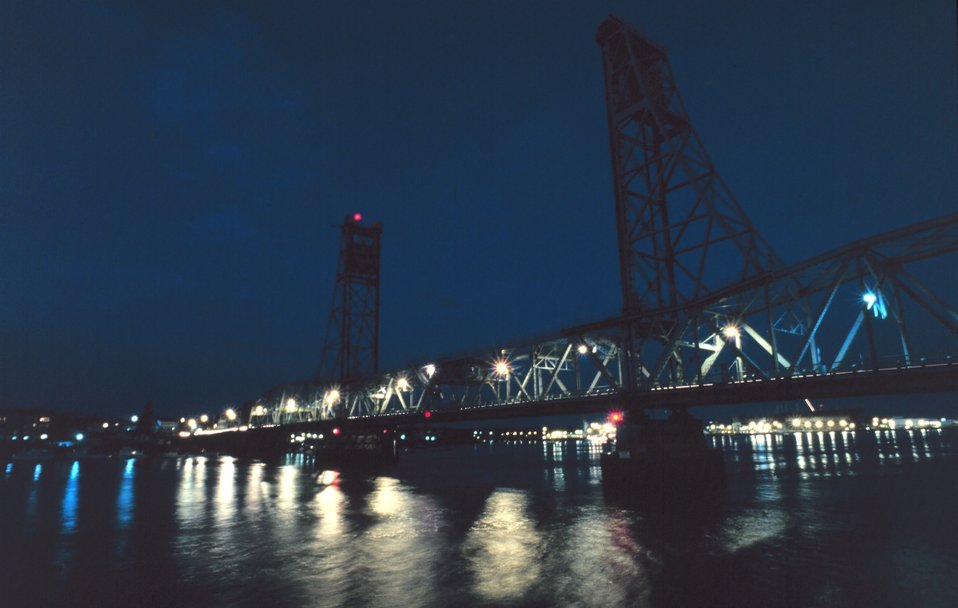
A Portsmouth Harbor Bridge.